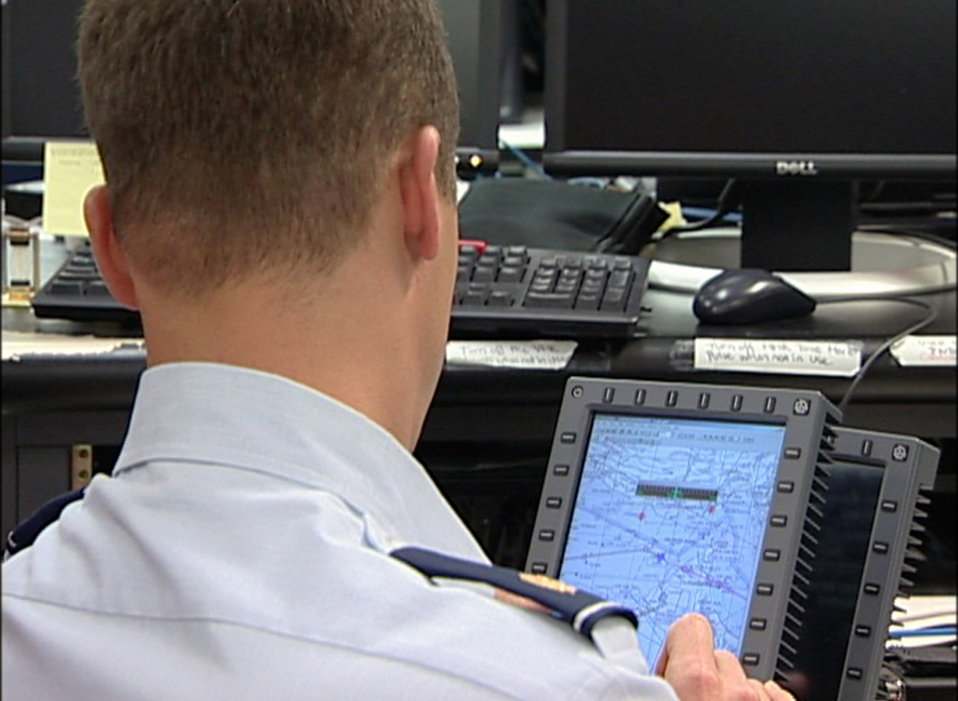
Flight information management initiative saves time, money

Maj. Daniel Cozzi tests the Comprehensive Combat Flight Information Management System during a demonstration for the equipment in October 2006 at the aviation laboratory of Rockwell Collins International, Inc.'s in Cedar Rapids, Iowa. Major Cozzi was at the facility supporting a demonstration of the system to gather data for possible incorporation into Air Force use. Major Cozzi is the project officer for the battlelab initiative Air Mobility Battlelab assigned to the Air Force Expeditionary Center at Fort Dix, N.J.